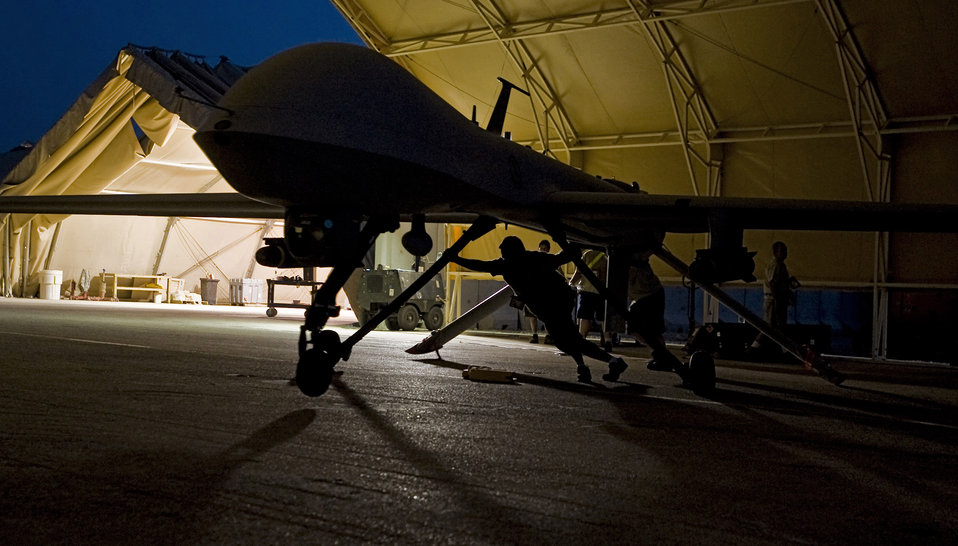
Another successful mission

An MQ-1B Predator goes through post-flight maintenance Aug. 11 at Ali Base, Iraq. Through the use of advanced capabilities, the Predator provides integrated close-air combat operations, to include intelligence, surveillance and reconnaissance.